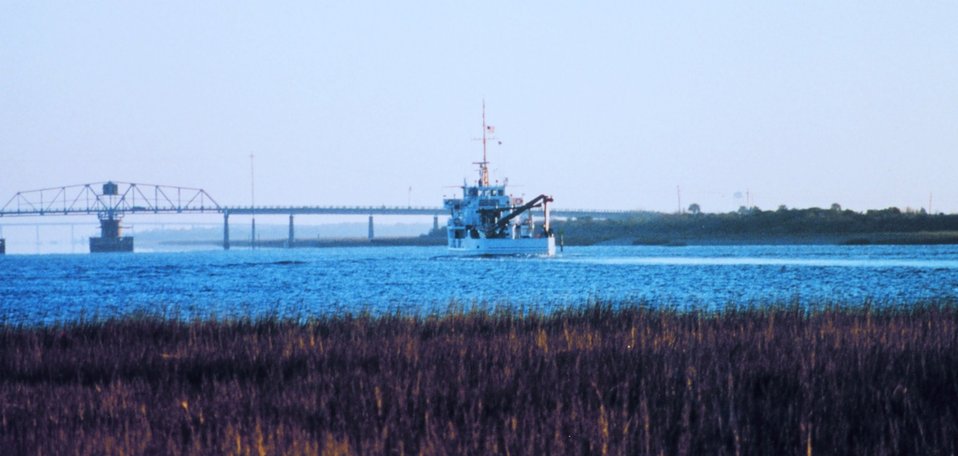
NOAA Ship FERREL in Intracoastal Waterway north of Charleston